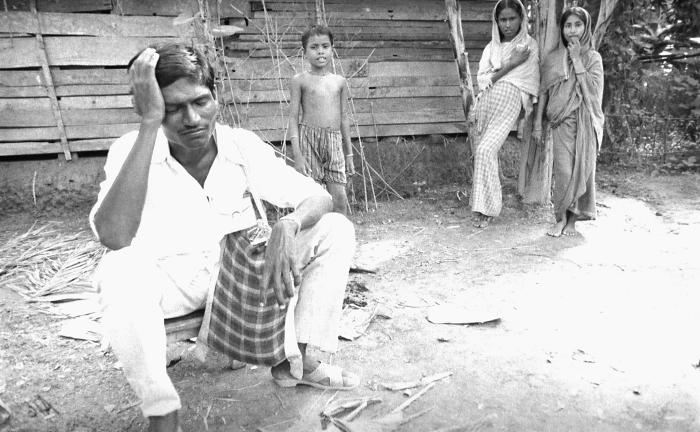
Smallpox eradication was hard work. This 1975 image depicted an eradication team local village resident volunteer sitting, but for a few moments in order to regroup, and collect his thoughts.Local residents who became resident vaccinators, played a profound role in achieving a successful outcome to the eradication program. As locals, they were viewed as familiar, and trusted, and spoke the local dialect, thereby, facilitating enhanced communication with fellow inhabitants. Also integral to the success of the eradication campaign, was getting the word out to those who were unaware of the disease's symptoms, and how to prevent its attack on those who had not yet been vaccinated, which included showing a picture of a child who displayed the characteristic smallpox maculopapular rash.